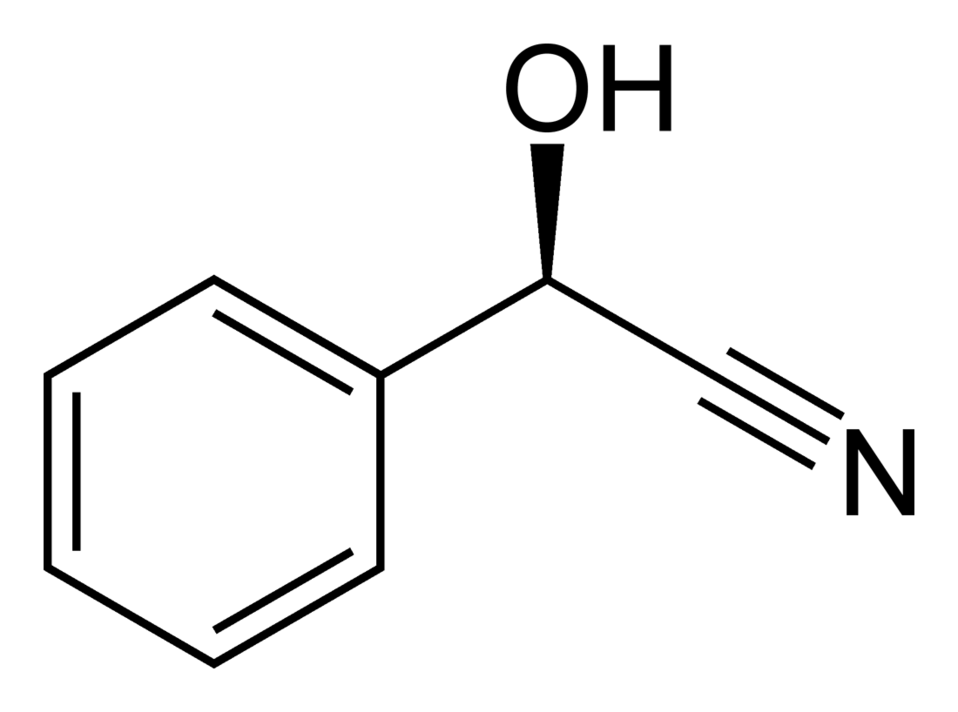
Skeletal formula of the (R) enantiomer of mandelonitrile, C8H7NO.